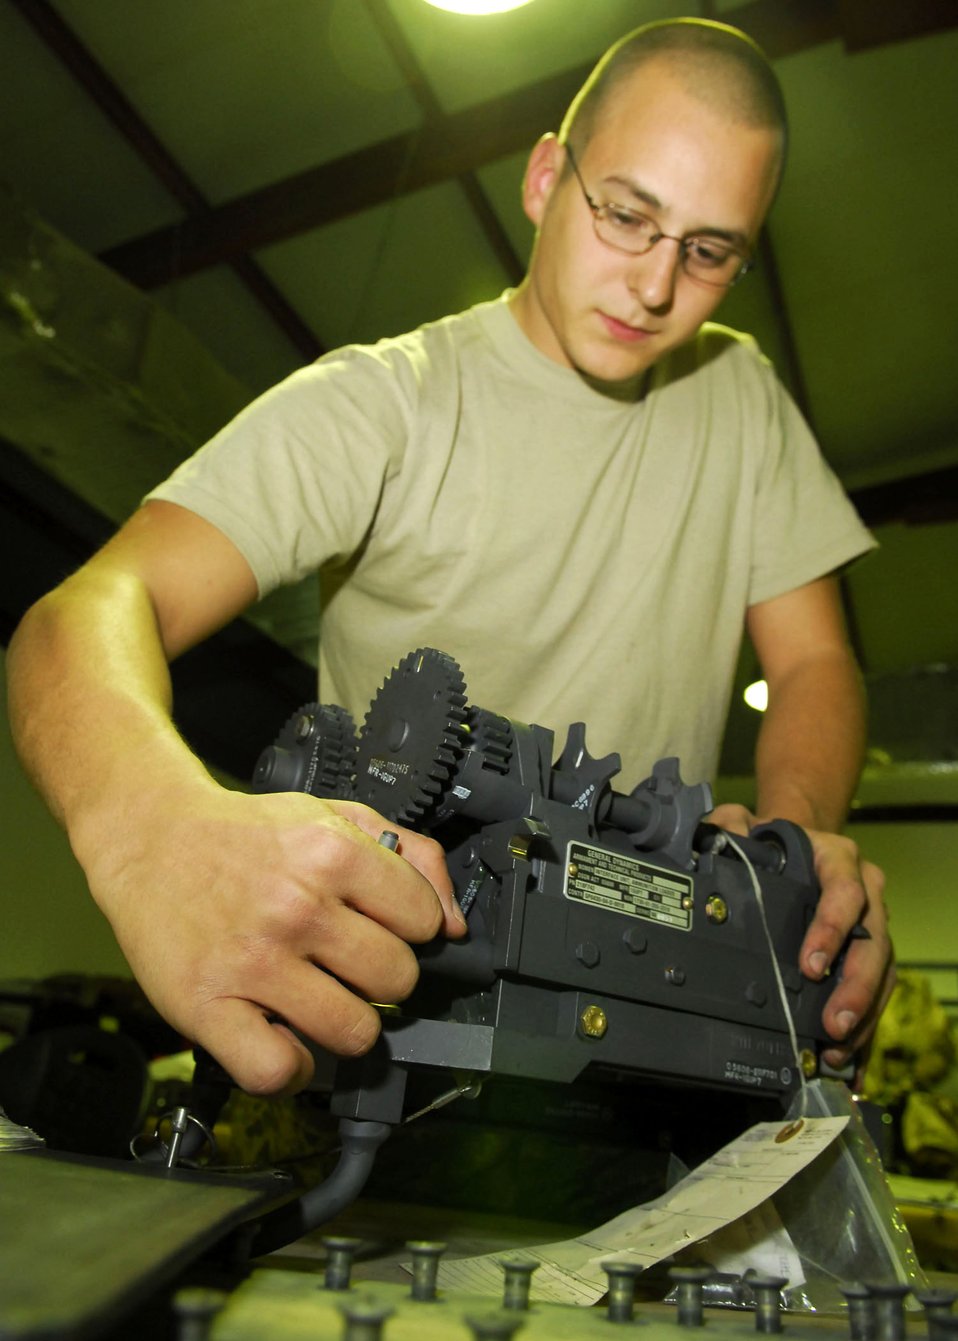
Weapons check

Senior Airman Brandon Dutton inspects a Universal Ammunition Loader System Dec. 28 at Balad Air Base, Iraq. Inspections on the UALS ensure they function within specifications. Airman Dutton, a 332nd Expeditionary Maintenance Squadron armament systems technician, is deployed from Luke Air Force Base, Ariz.